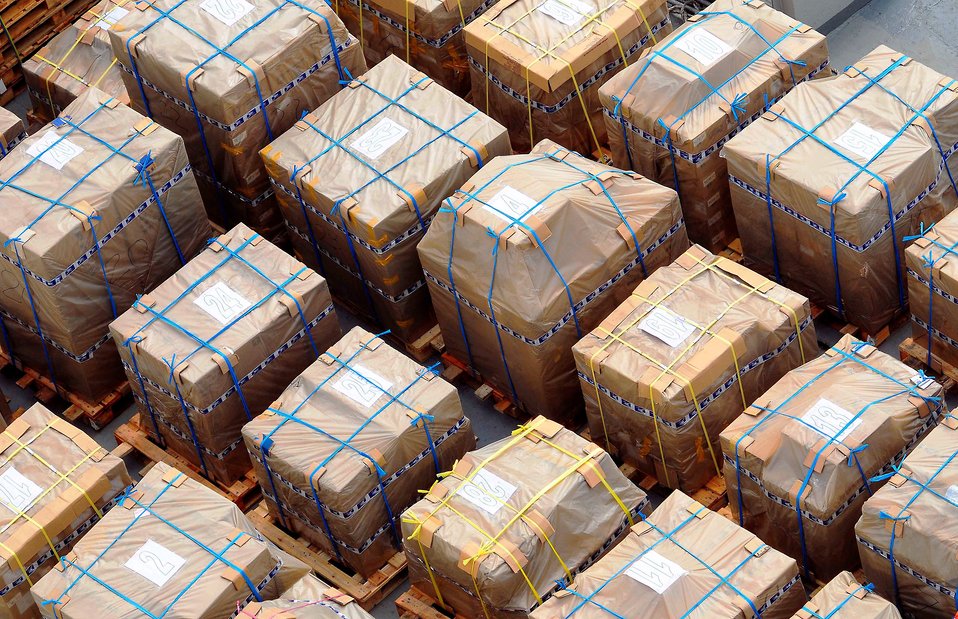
Palletized medical supplies and cargo are staged on a barge prior to being onloaded aboard the Military Sealift Command hospital ship USNS Mercy (T-AH 19) in support of Pacific Partnership 2010 on July 7, 2010. Mercy is en route to Indonesia during the fifth in a series of annual U.S. Pacific Fleet humanitarian and civic assistance endeavors to strengthen regional partnerships.